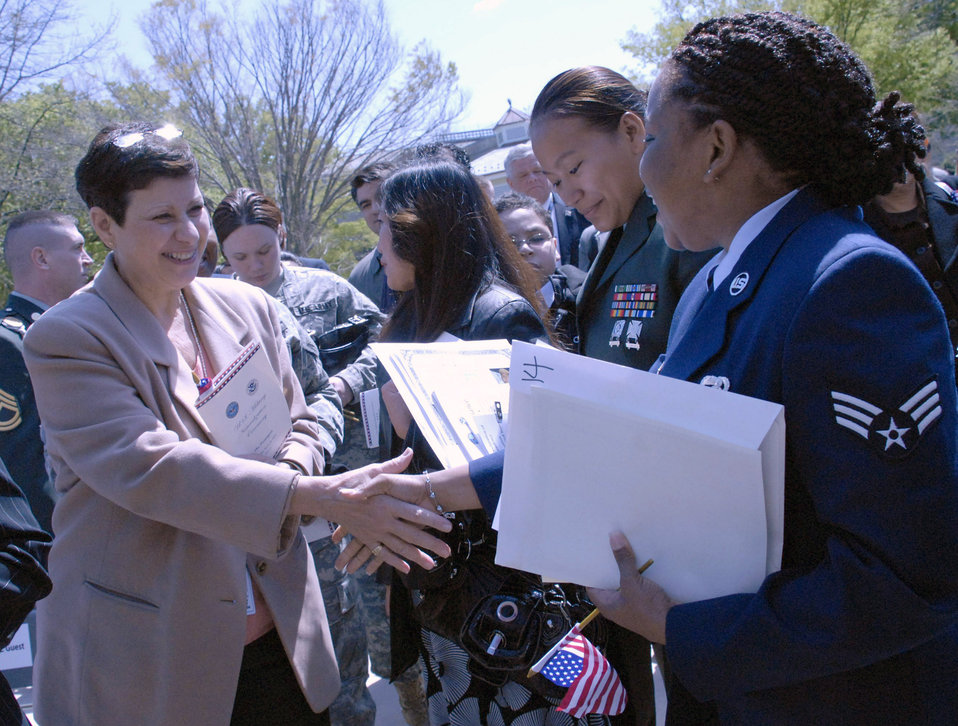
Airman becomes citizen in Pentagon ceremony

Senior Airman Cassandra Obermuller Brandon (right) accepts congratulations from audience members after accepting her naturalization certificate during a naturalization ceremony April 14 in the Pentagon's center courtyard. More than 20 servicemembers became American citizens during the ceremony. Airman Brandon, who was born and raised in Guyana, moved to the United States with her father in 1991 and joined the Air Force Reserve in 2002.